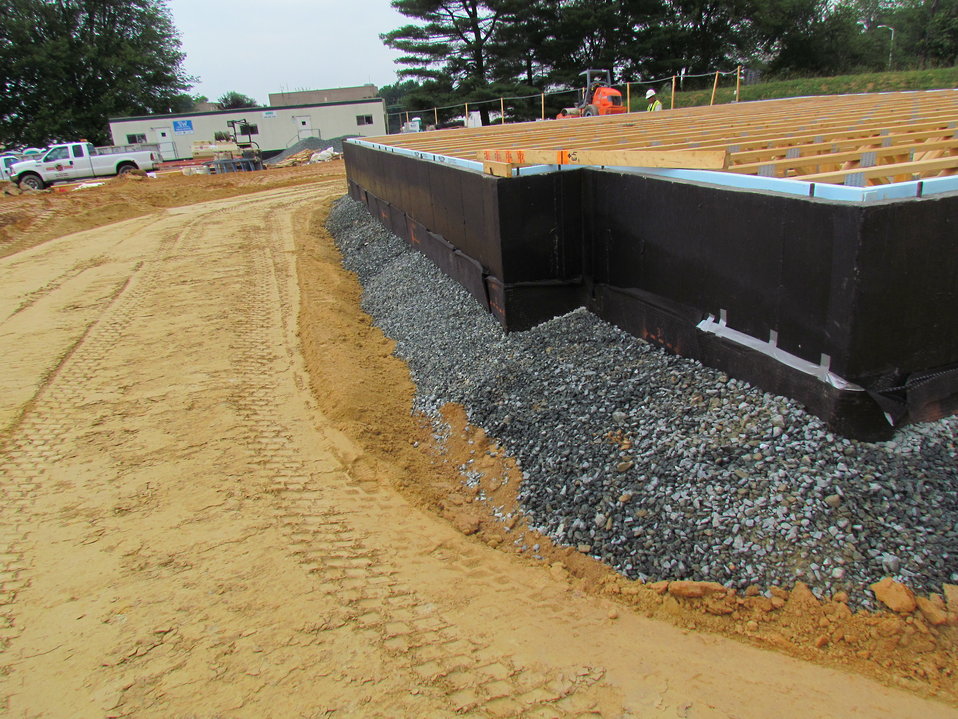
Net-Zero Energy Residential Test Facility - Photo showing compacted area around basement walls and drainage stone.